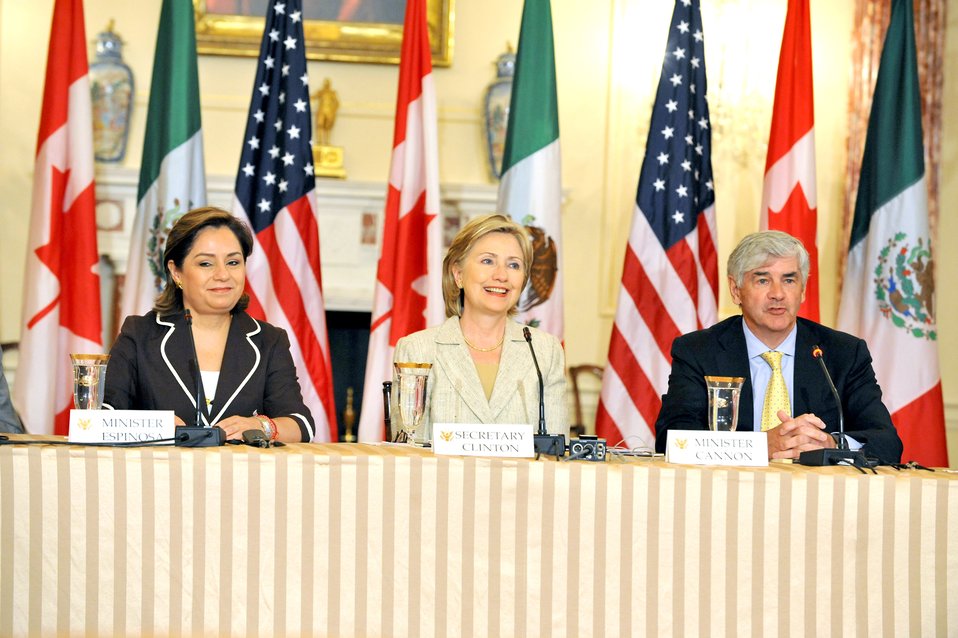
Secretary Clinton Hosts North American Trilateral Ministerial

U.S. Secretary of State Hillary Rodham Clinton hosts the North American Trilateral Ministerial with Her Excellency Dr. Patricia Espinosa Cantellano, Secretary of Foreign Relations of Mexico and The Honorable Lawrence Cannon, P.C., M.P., Minister of Foreign Affairs of Canada, in the Benjamin Franklin Room of the U.S. Department of State in Washington, DC July 16, 2009.